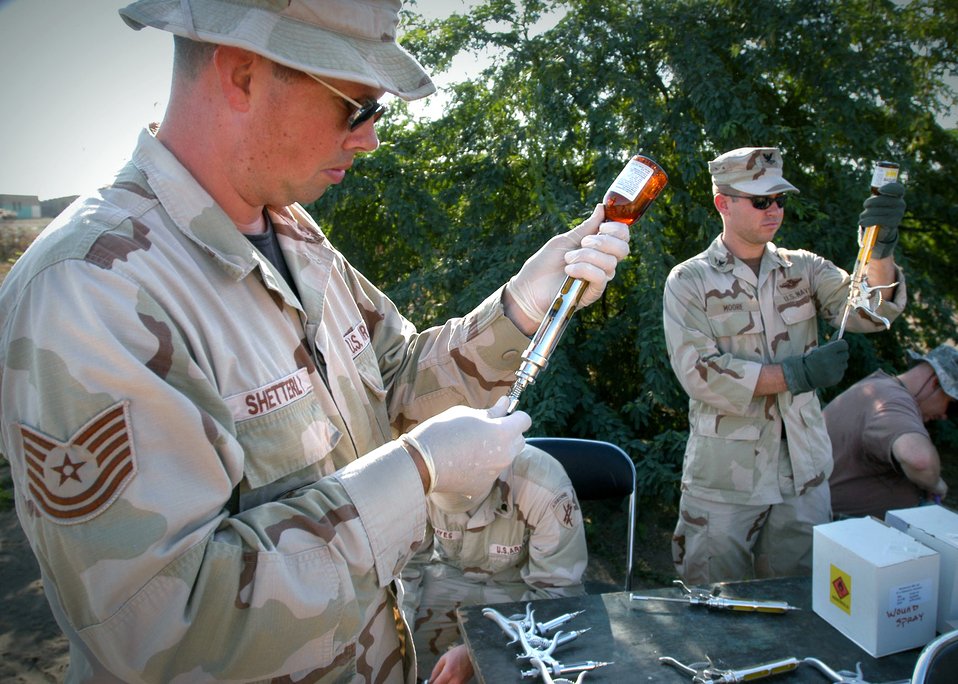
World powers bring soft touch to African neighbors

Tech. Sgt. Chris Shetterly and other medical personnel prepare medications Jan. 9 for a veterinarian civil action program sponsored by the Combined Joint Task Force - Horn of Africa in the Damerjong district, Djibouti.